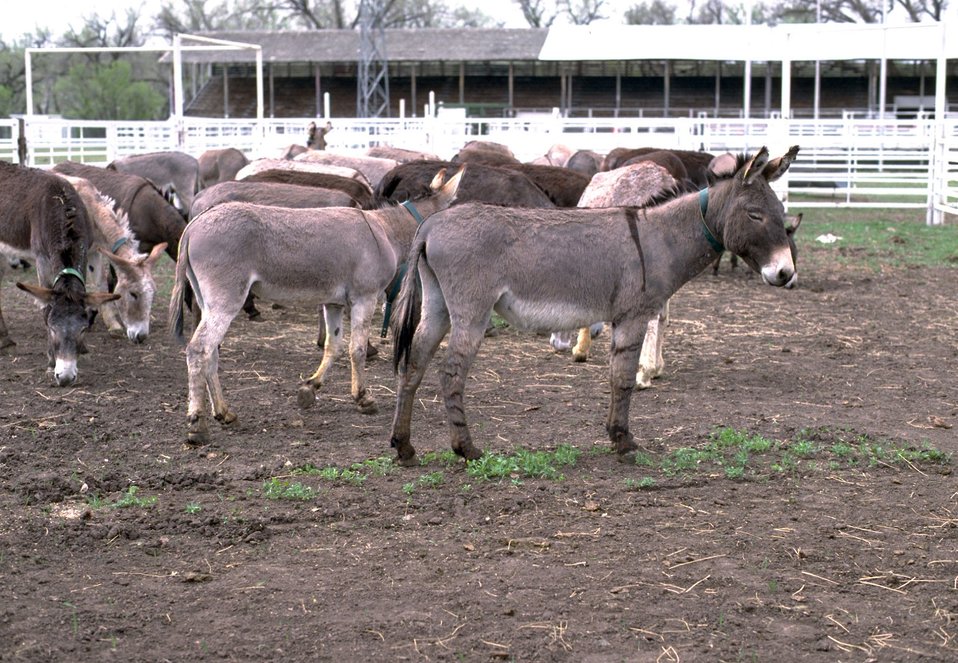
Wild burros in pen for adoption